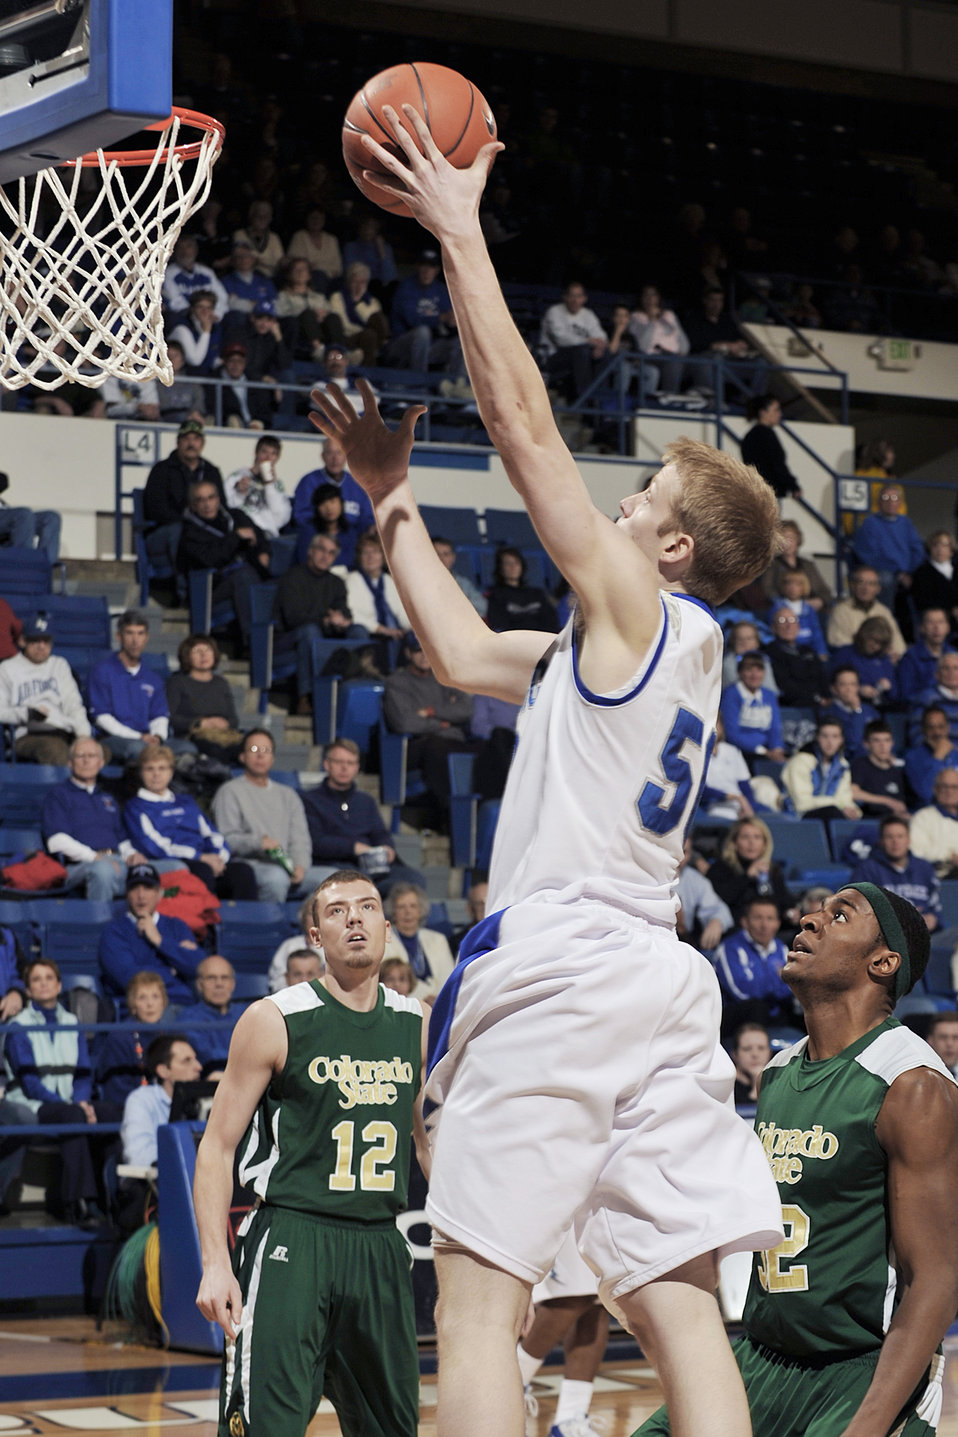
Colorado State beat Falcons

Falcon senior Grant Parker goes up for 2 of his game-high 13 points as Colorado State beat Air Force 51-47 at the U.S. Air Force Academy's Clune Arena Feb. 9, 2010. The Falcons are 9-14 overall and 1-9 in the Mountain West Conference.